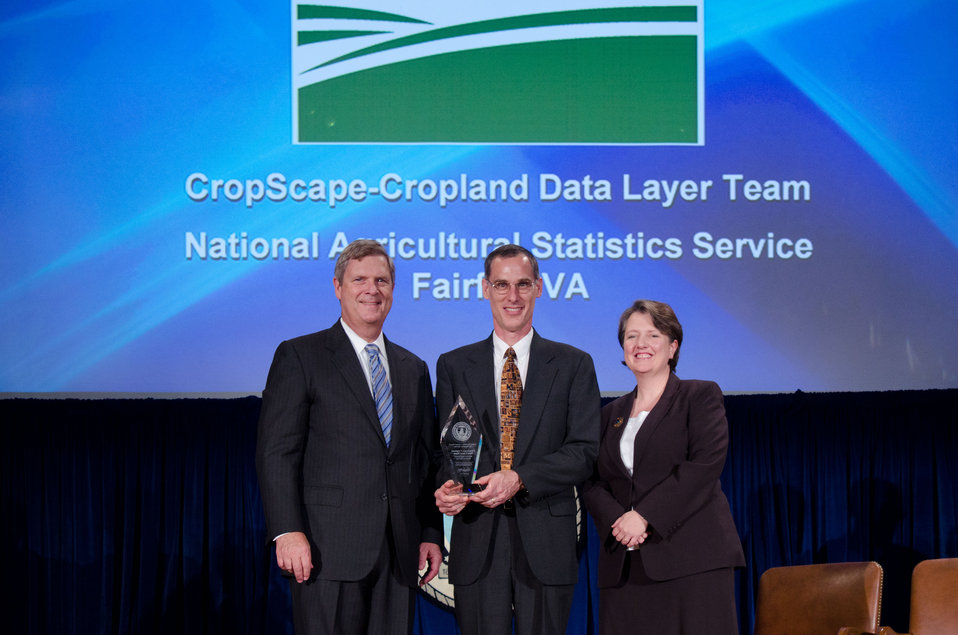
Agriculture Secretary Tom Vilsack (l) and Deputy Secretary Kathleen Merrigan (r), presents the Ensuring Our National Forests and Private Working Lands Are Conserved, Restored, and Made More Resilient To Climate Change, While Enhancing Our Water Resources Award to CropScape-Cropland Data Layer Team, National Agricultural Statistics Service, Fairfax, VA. Jeffrey Todd Bailey, Group Leader. For completing a conterminous National Cropland Data Layer product and CropScape, a web dissemination tool for exploring, visualizing, and querying of United States cropland for use in research, conservation, climate change, and water resource. On Wednesday, September 14, 2011 in the Jefferson Auditorium at the US Department of Agriculture in Washington, DC.